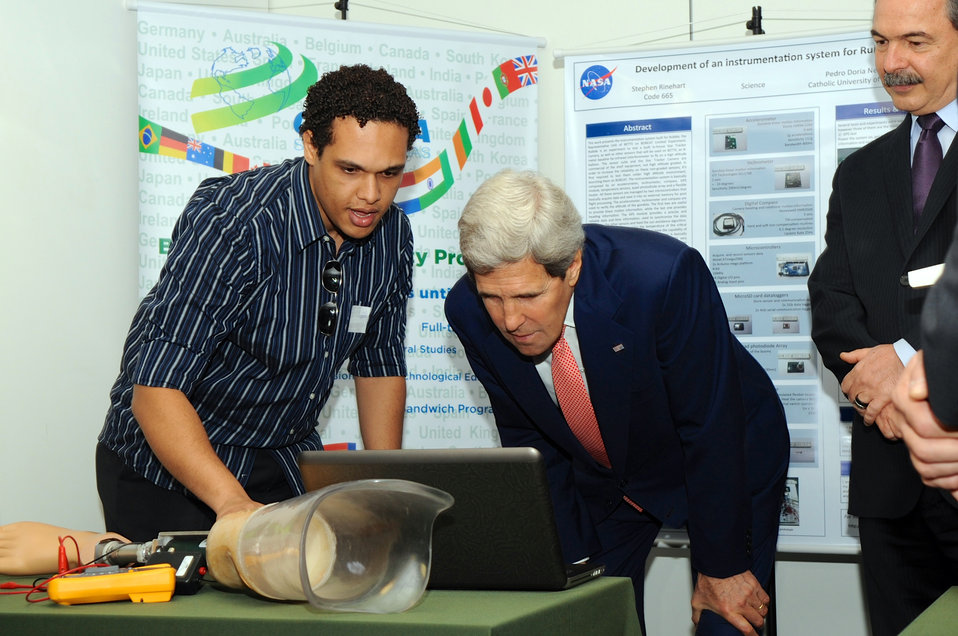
Secretary Kerry Views a Brazilian Science Exhibition

U.S. Secretary of State John Kerry, accompanied by Brazilian Minister of Education Aloizio Mercadante, examines the computer controls for a prosthetic leg device as the officials tour a science exhibition in Brasilia, Brazil, on August 13, 2013.